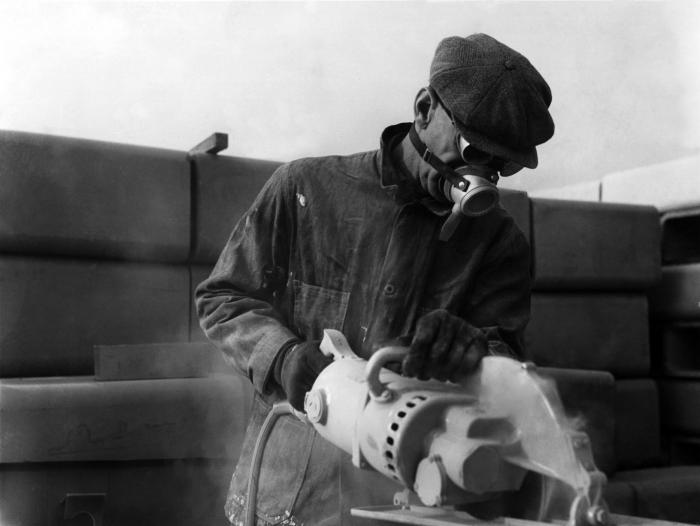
This historic image was provided by the Center for Disease Control's (CDC), National Institute for Occupational Safety and Health (NIOSH). The photograph depicted an industrial worker using a hand-held power saw while cutting an unknown material. He was wearing protective goggles, gloves, and a filtered breathing mask, all of which would have protected him from flying debris, and airborne particulates.